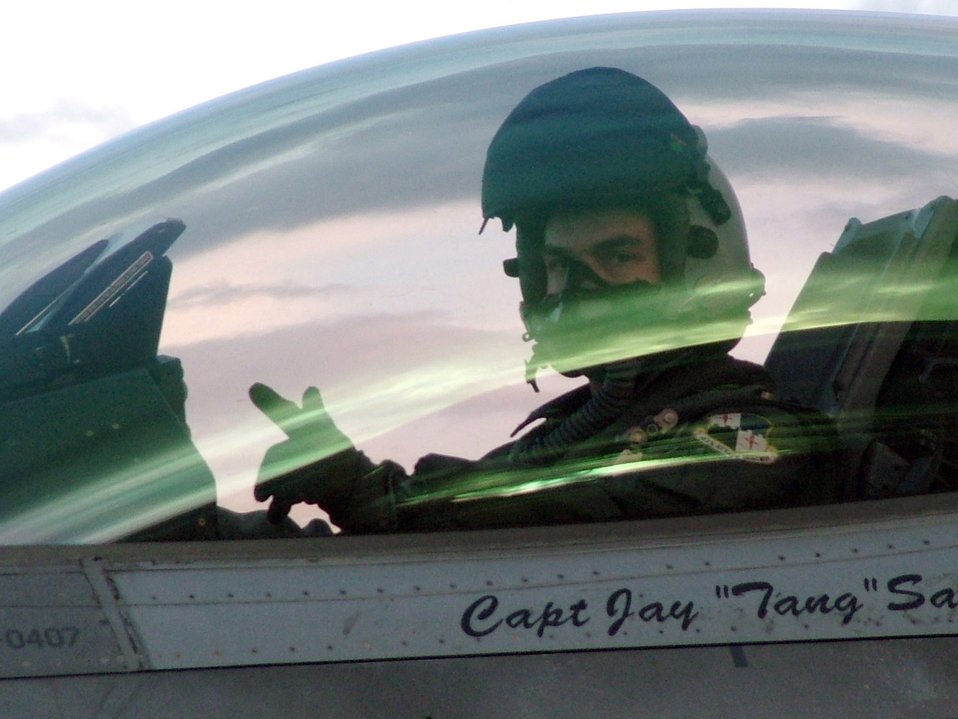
Sign of success

SIALULIAI, Lithuania (AFPN) -- Capt. Joey Gaona signals the completion of another successful mission here. The 23rd Expeditionary Fighter Squadron is participating in NATO's Baltic Air Policing mission, providing 24-hour security over the skies of Lithuania, Latvia and Estonia. Captain Gaona is an F-16 Fighting Falcon pilot assigned to the 23rd Fighter Squadron at Spangdahlem Air Base, Germany.